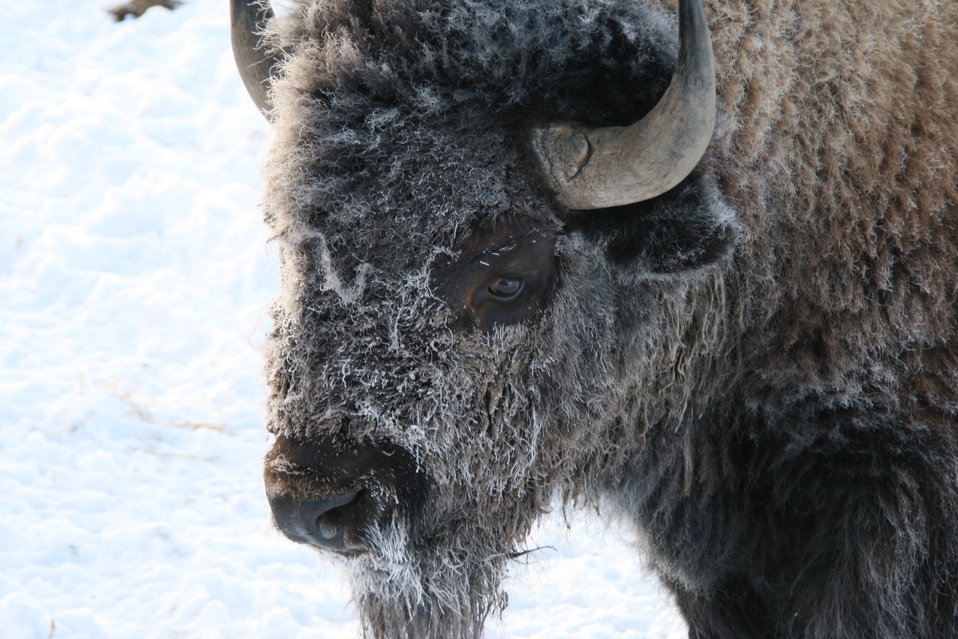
Frosty Mask

A bison sports a frosty mask on a February morning.

Credit: USFWS / Chris Clapp, National Elk Refuge volunteer